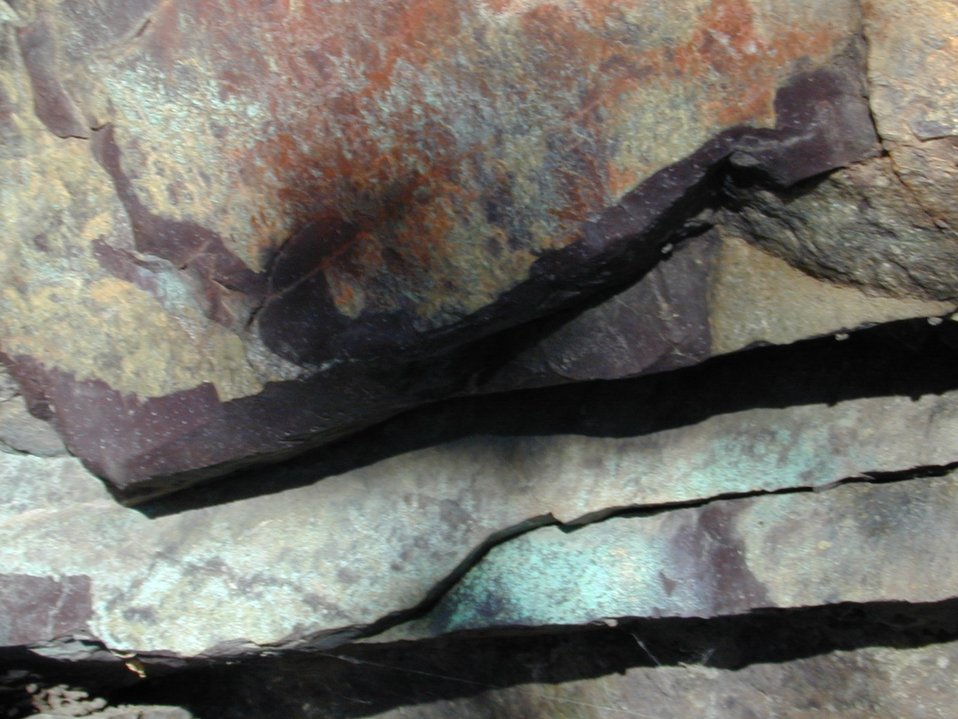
Cultural resources Petroglyphs on Lower Salmon River Cottonwood Field Office UCSC Upper Columbia Salmon Clearwater District